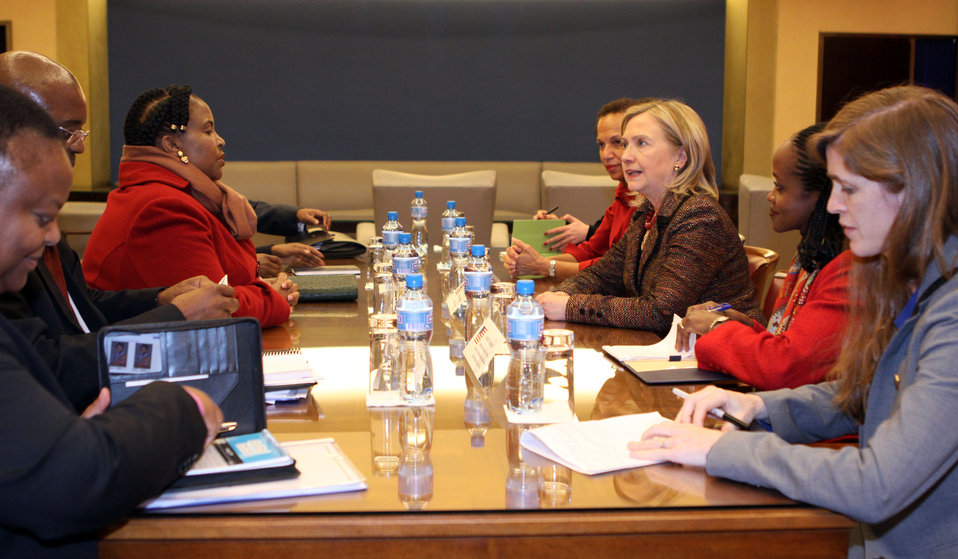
Secretary Clinton Meets With South African Foreign Minister Nkoane-Mashabane

U.S. Secretary of State Hillary Rodham Clinton meets with South African Foreign Minister Maite Nkoane-Mashabane at the United Nations Office at Geneva, Switzerland, on February 28, 2011.